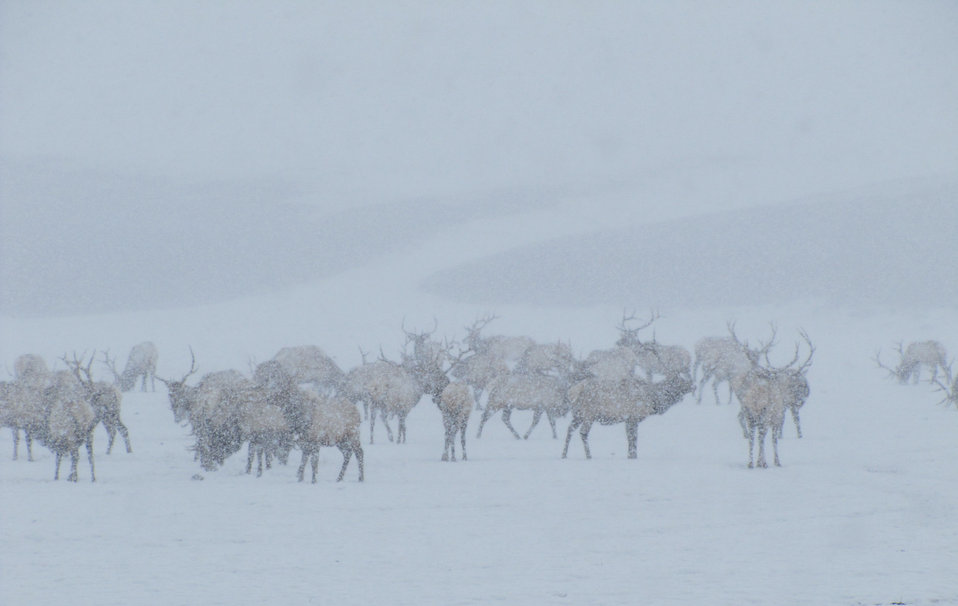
Spring snow squall

A group of elk on the National Elk Refuge wait out a short- lived snow squall on an otherwise springlike day.